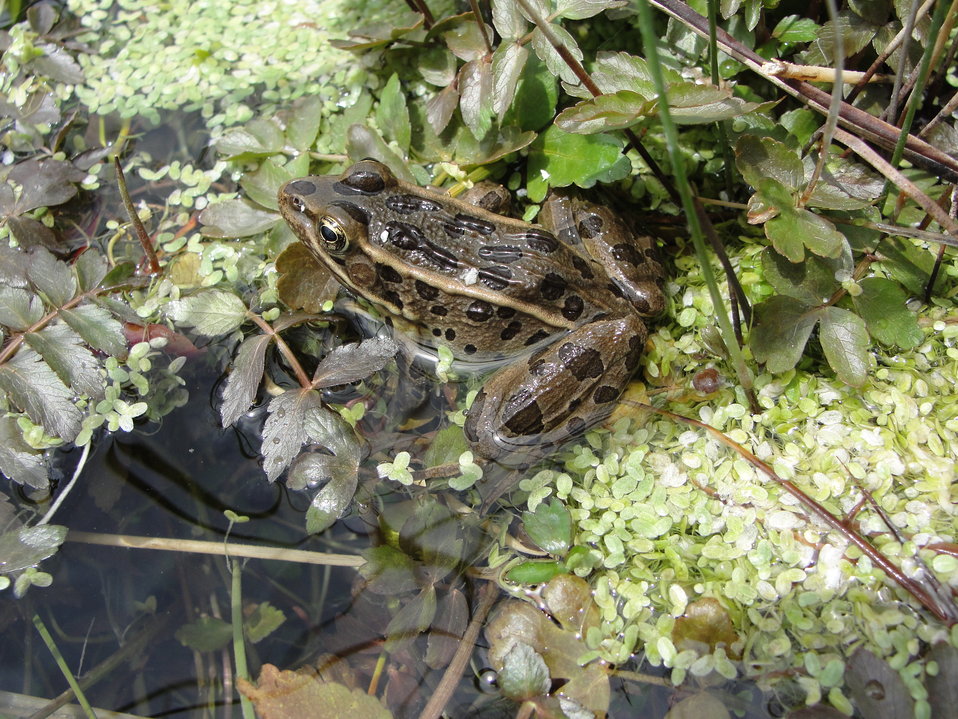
Northern leopard frog (Rana pipiens ) occurring in Spring Valley, Nevada. Date of photo 5-18-2010.